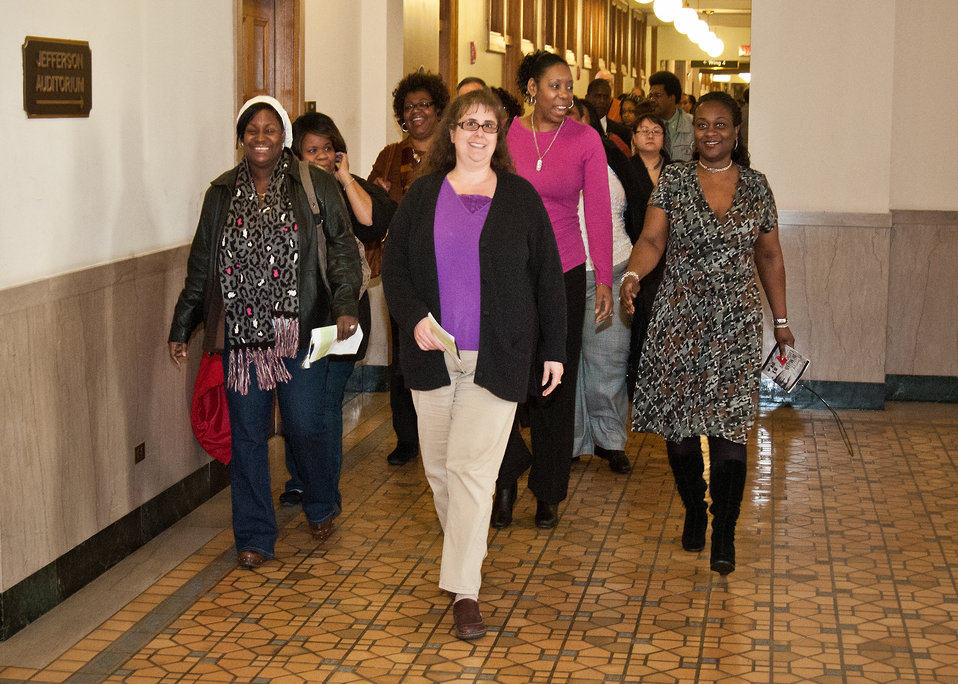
United States Department of Agriculture employees march through the hallways of USDA to a luncheon for employees after attending the National Service Day and Martin Luther King Celebration in honor of Dr. Martin Luther King Jr’s contributions to the Civil Rights Movement at the United States Department of Agriculture in Washington, D.C., on Thursday, January 12, 2012.